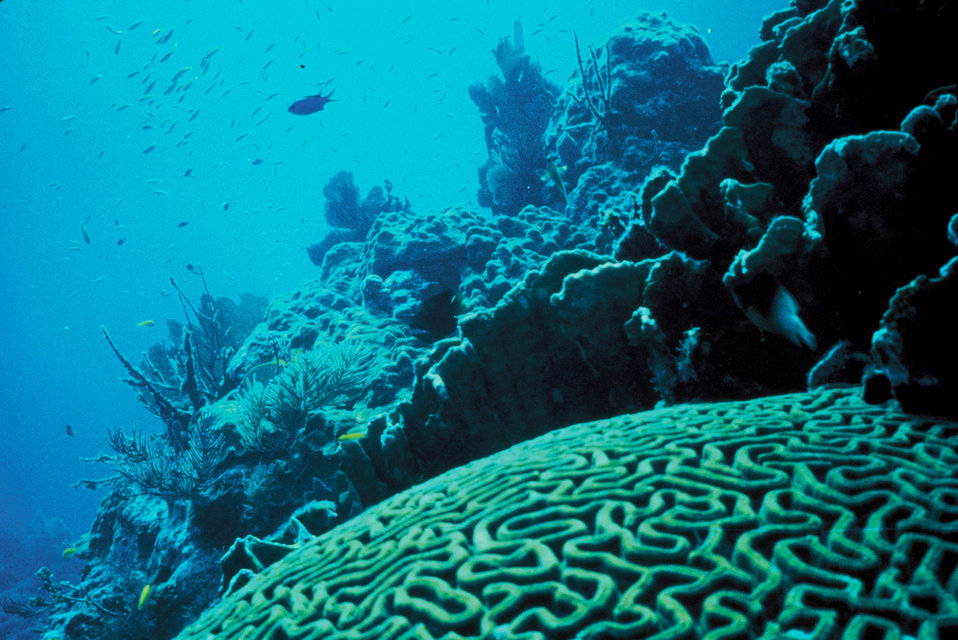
Coral Reef

Photo credit: USFWS/Jerry Reid

Water quality improvements, particularly controlling nutrient inputs, can bolster reef resilience to bleaching and implementation of existing laws may help mitigate ocean acidification effects on nearshore habitats